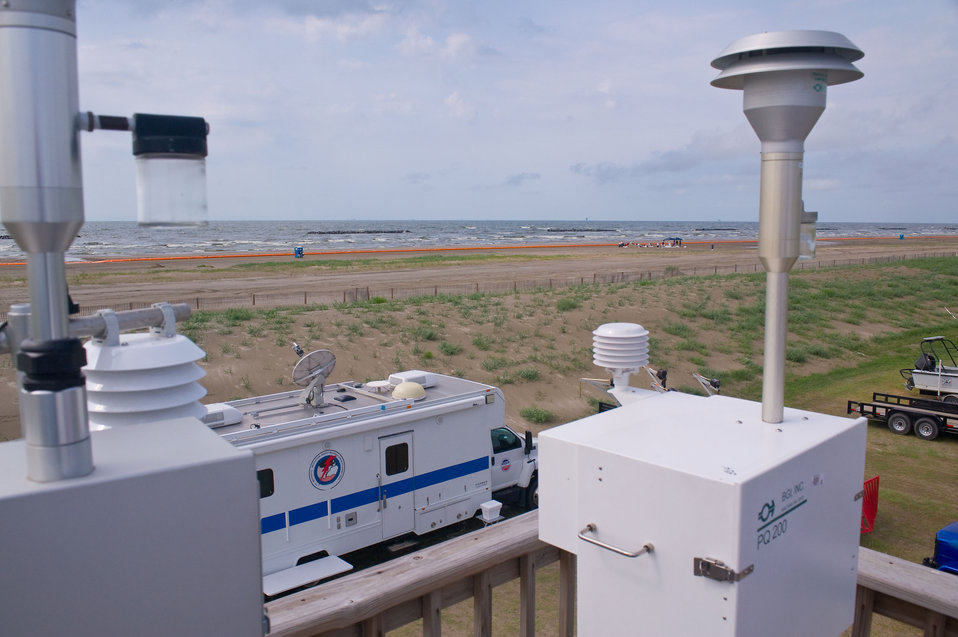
June 4, Equipment along Grand Isle State Park, La

Since the BP Spill began, EPA has set up air monitoring equipment along the Gulf coast. See more at: www.epa.gov/bpspill/epa.html US EPA photo by Eric Vance